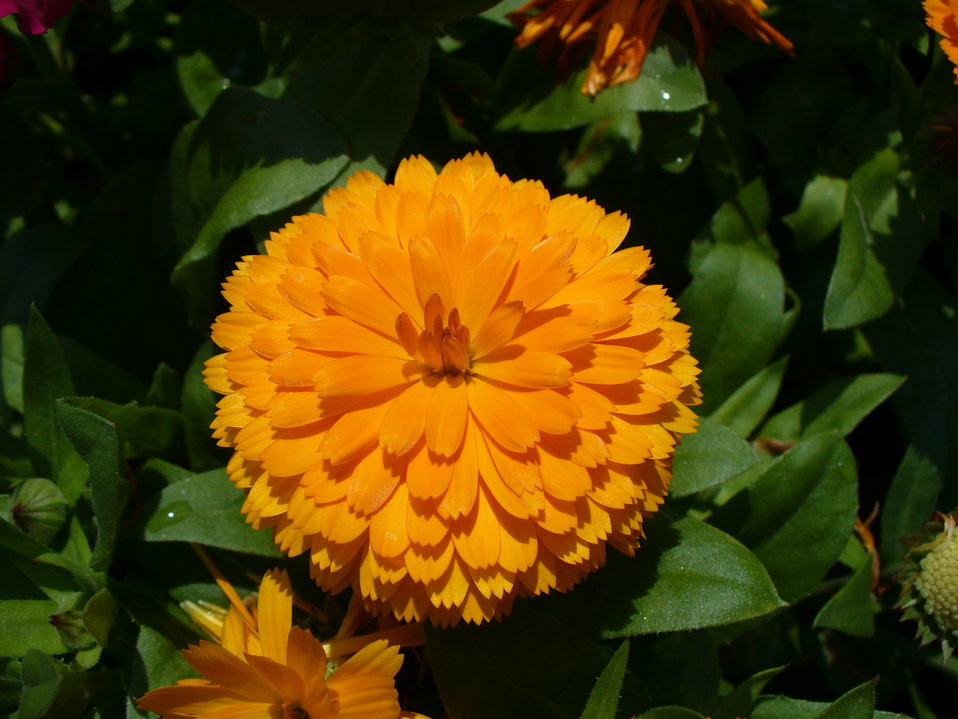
I am the originator of this photo. I hold the copyright. I release it to the public domain. This photo depicts a flower.